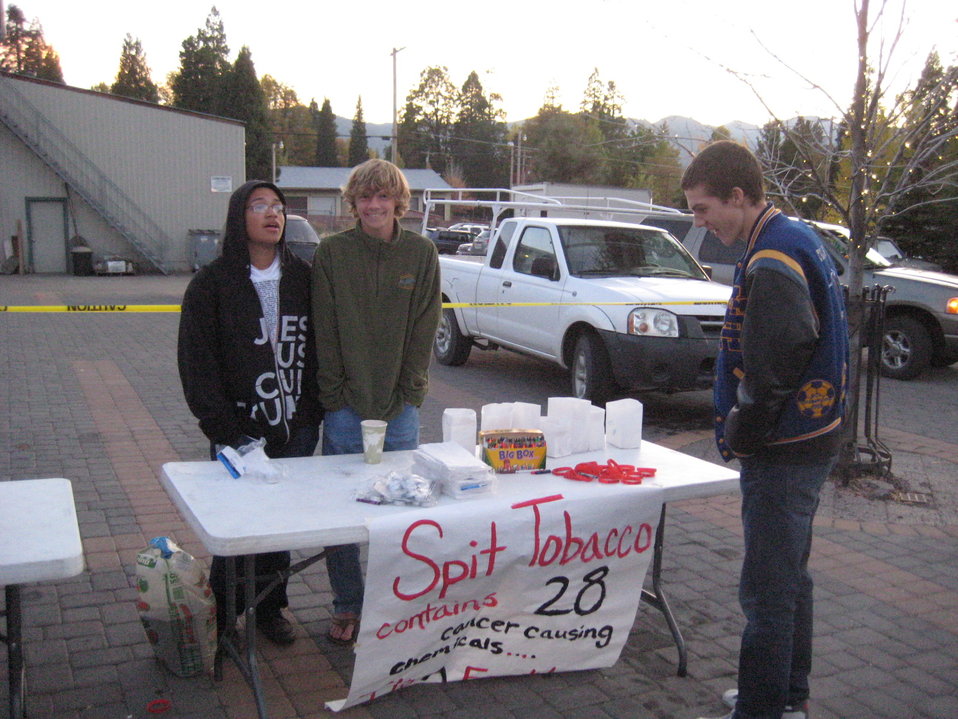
Siskiyou County Drug Facts Week Event

Two students work the table at a memorial event organized by the Leadership Class at Mt. Shasta High School for NDFW. The purpose was to recognize and highlight people who have lost their lives due to drug abuse.